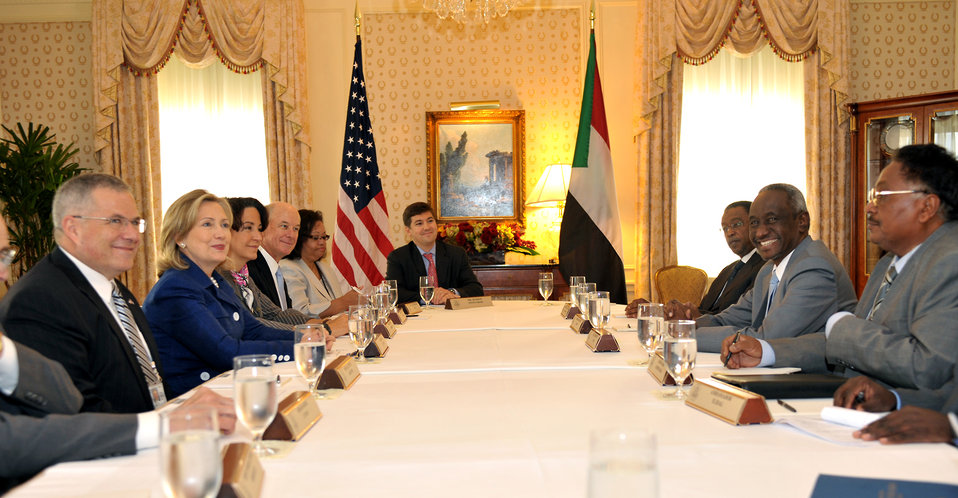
Secretary Clinton Holds a Bilateral With Sudanese Vice President Ali Osman Taha

U.S. Secretary of State Hillary Rodham Clinton holds a bilateral meeting with Sudanese Vice President Ali Osman Taha at the Waldorf-Astoria in New York, New York, on September 21, 2010.